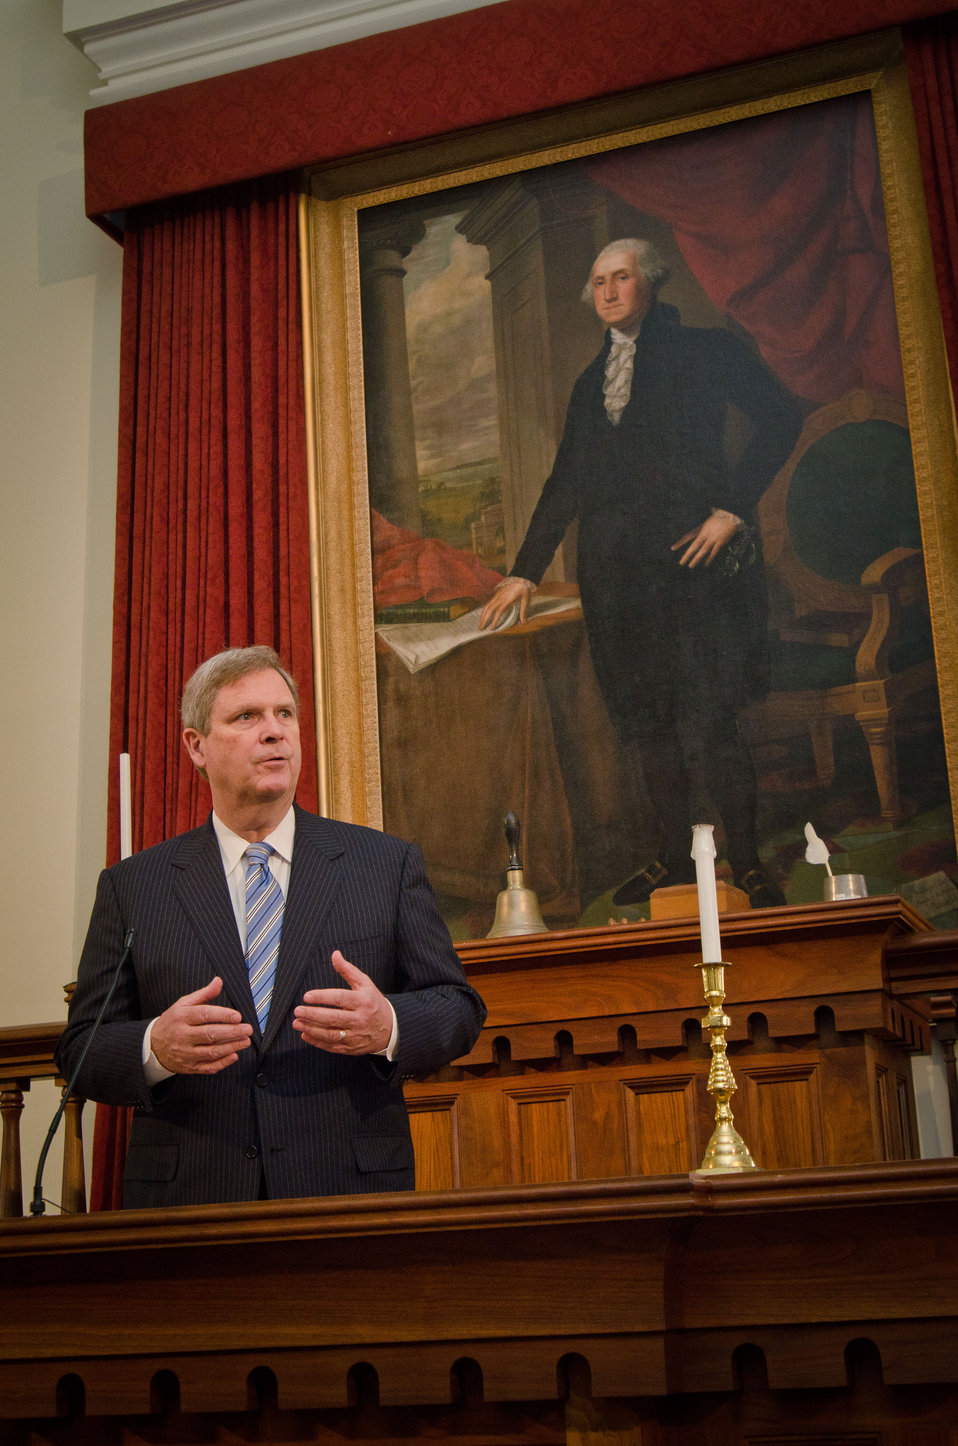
Agriculture Secretary Tom Vilsack speaking at the Old State Capitol in Springfield, IL, to commemorate the 150th Anniversary of the creation of the U.S. Department of Agriculture on Wednesday, November 2, 2011.